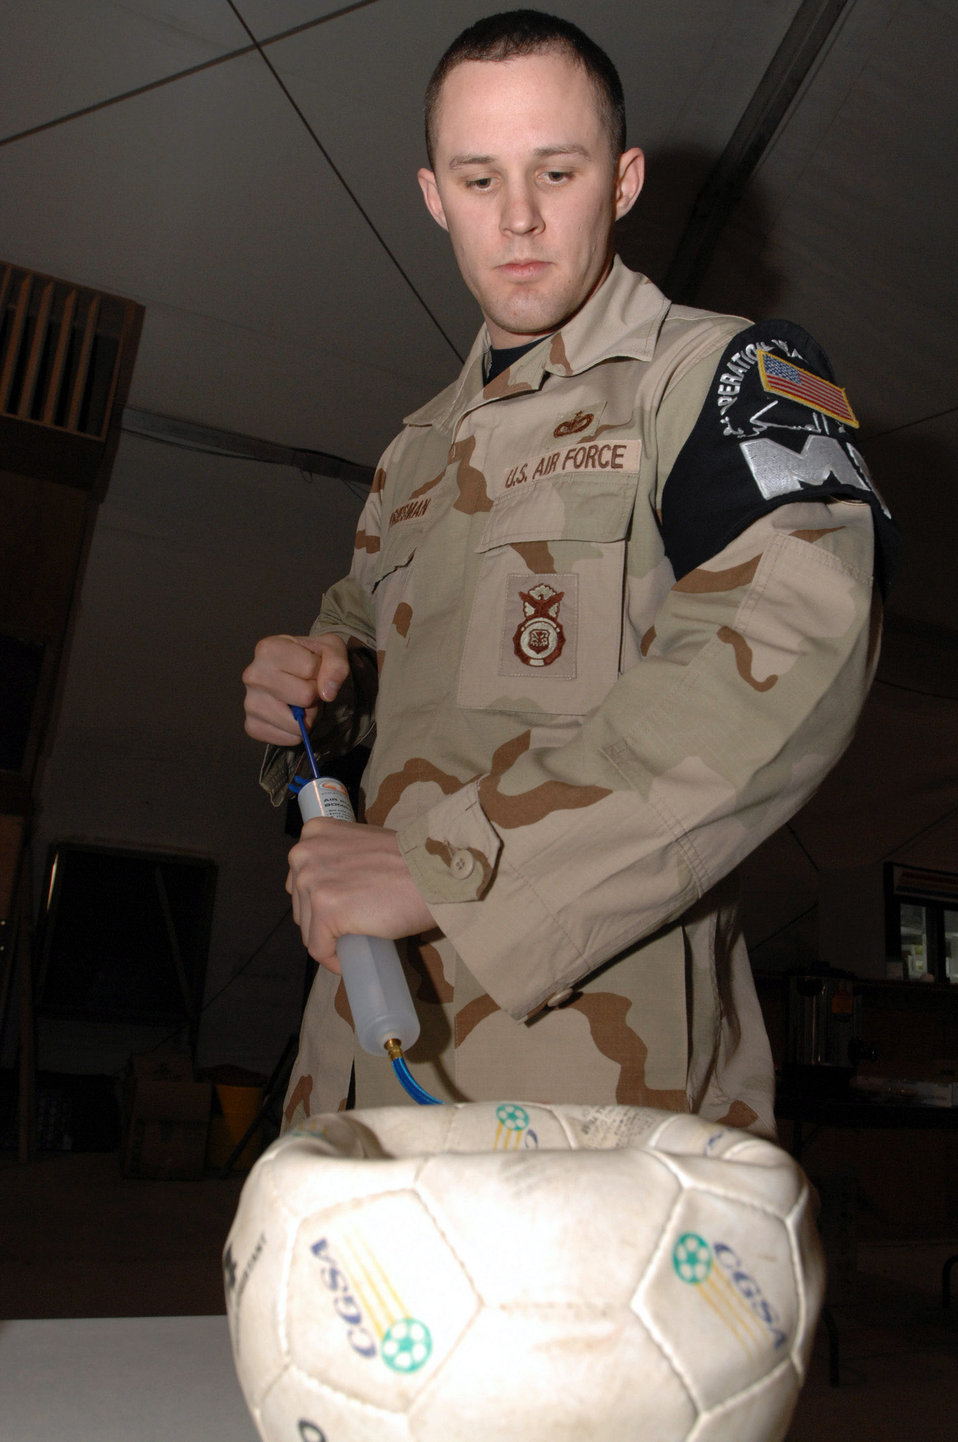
Iraqi Operation Child donations packed, ready

Staff Sgt. Daniel Priesman inflates a soccer ball at Ali Base, Iraq, Dec. 22 in support of Operation Iraqi Child. In just over a month, Airmen on base collected thousands of school supply items, toys and clothing from friends and family in the U.S. The donated items will be given to Iraqi families in the An Nasiriyah area. Sergeant Priesman is assigned to the 407th Expeditionary Provost Marshal Office and is deployed from Royal Air Force Lakenheath, England.